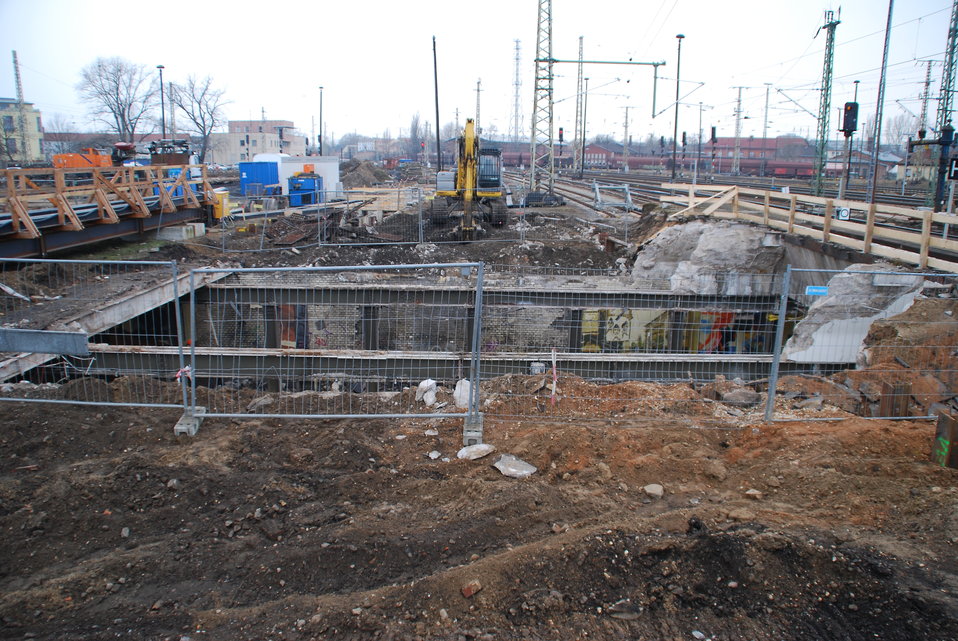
Abriss Bahnhofstunnel Frankfurt (Oder)